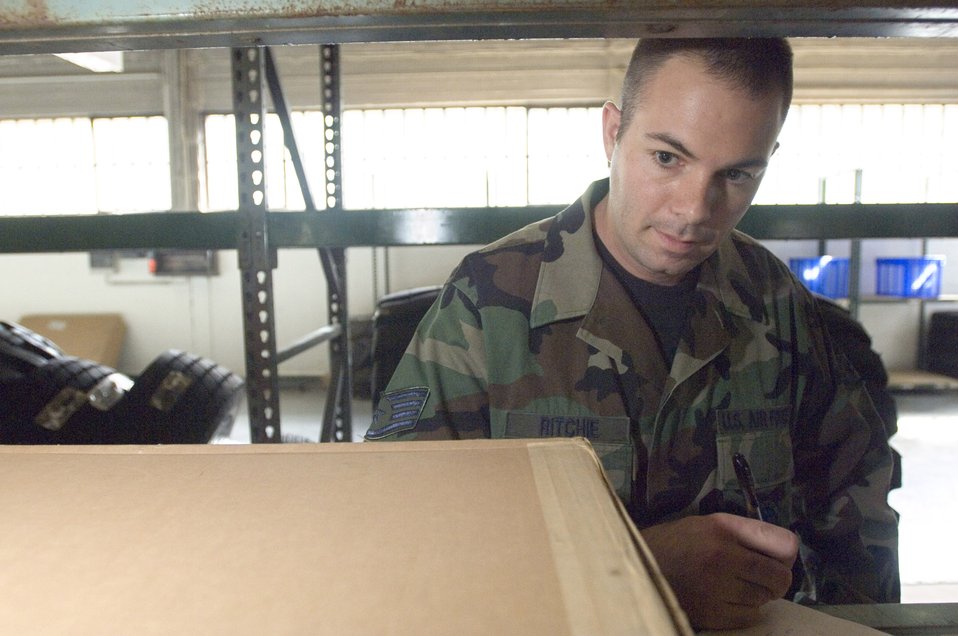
Sembach squadron maintains war reserves

Staff Sgt. Brad Ritchie checks stock levels in the vehicle maintenance shop Sept. 20 at Sembach Air Base, Germany. Sergeant Ritchie is a supply journeyman with Sembach's 435th Materiel Maintenance Squadron.